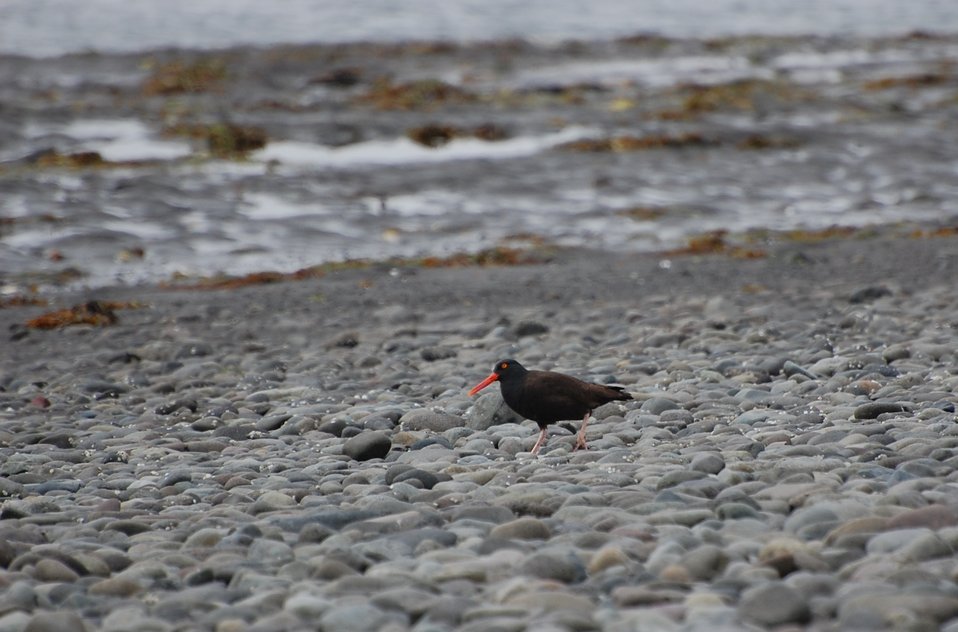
Black Oystercatcher

Kinzarof Lagoon, Izembek National Wildlife Refuge
Photo by Kristine Sowl,
USFWS, Public Domain